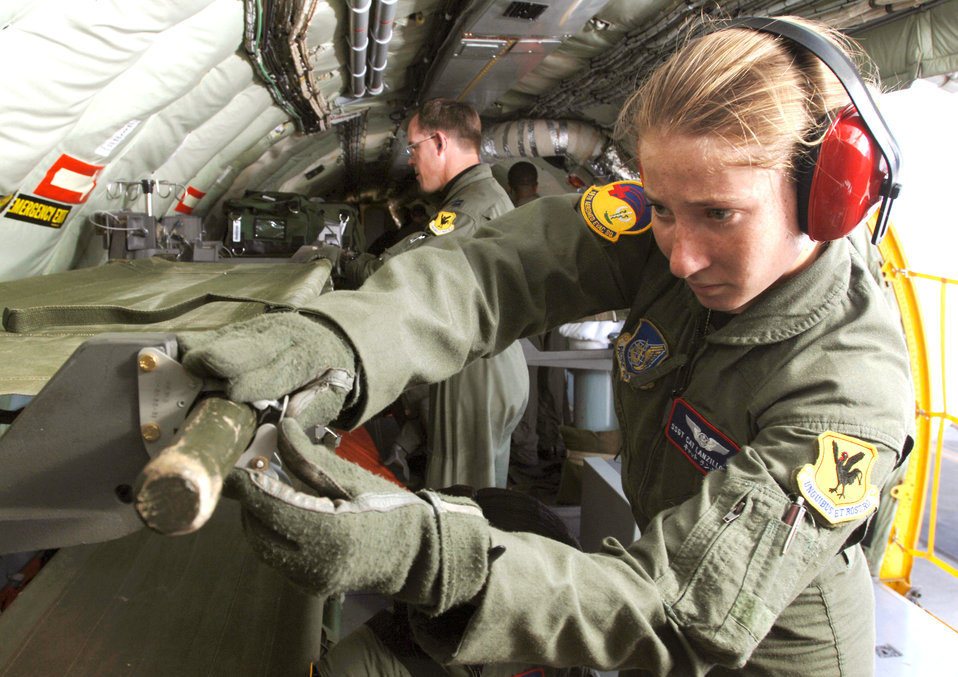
Kadena medics gain knowledge while deployed

KADENA AIR BASE, Japan -- Staff Sgt. Cat Lanzillotta (foreground) and Capt. Michael Wascher secure litters on a patient support pallet inside a KC-135 Stratotanker in preparation for a training mission here. The Airmen are assigned to the 18th Aeromedical Evacuation Squadron.